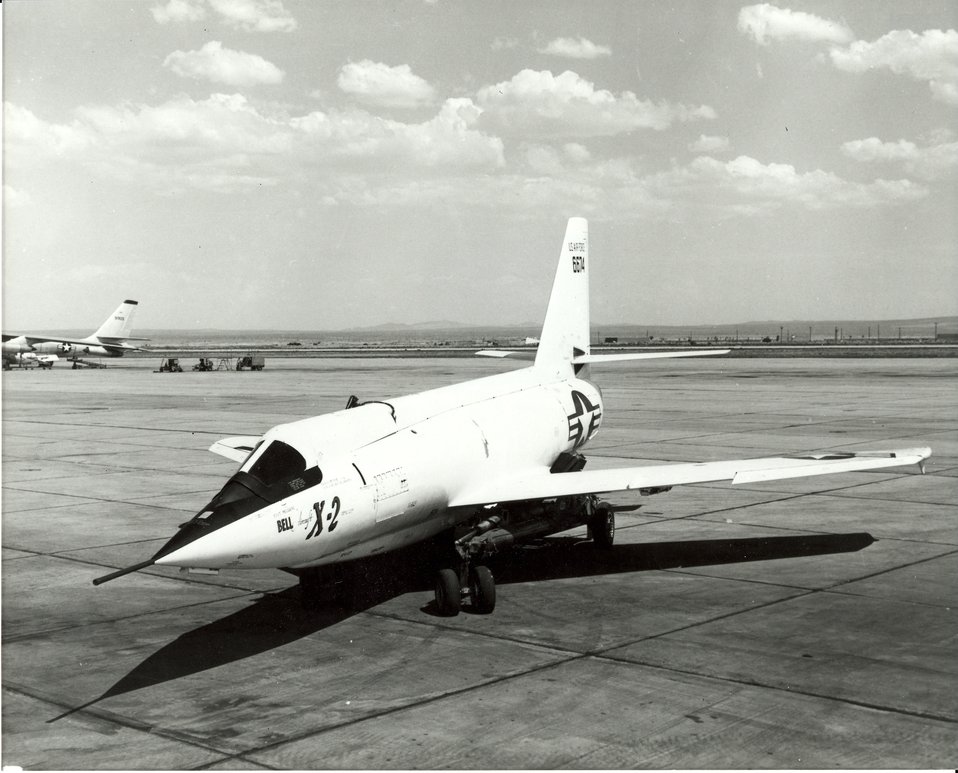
Bell X-2

The Bell X-2 became the first aircraft to climb above 100,000 feet and exceed Mach 3 in September 1956.